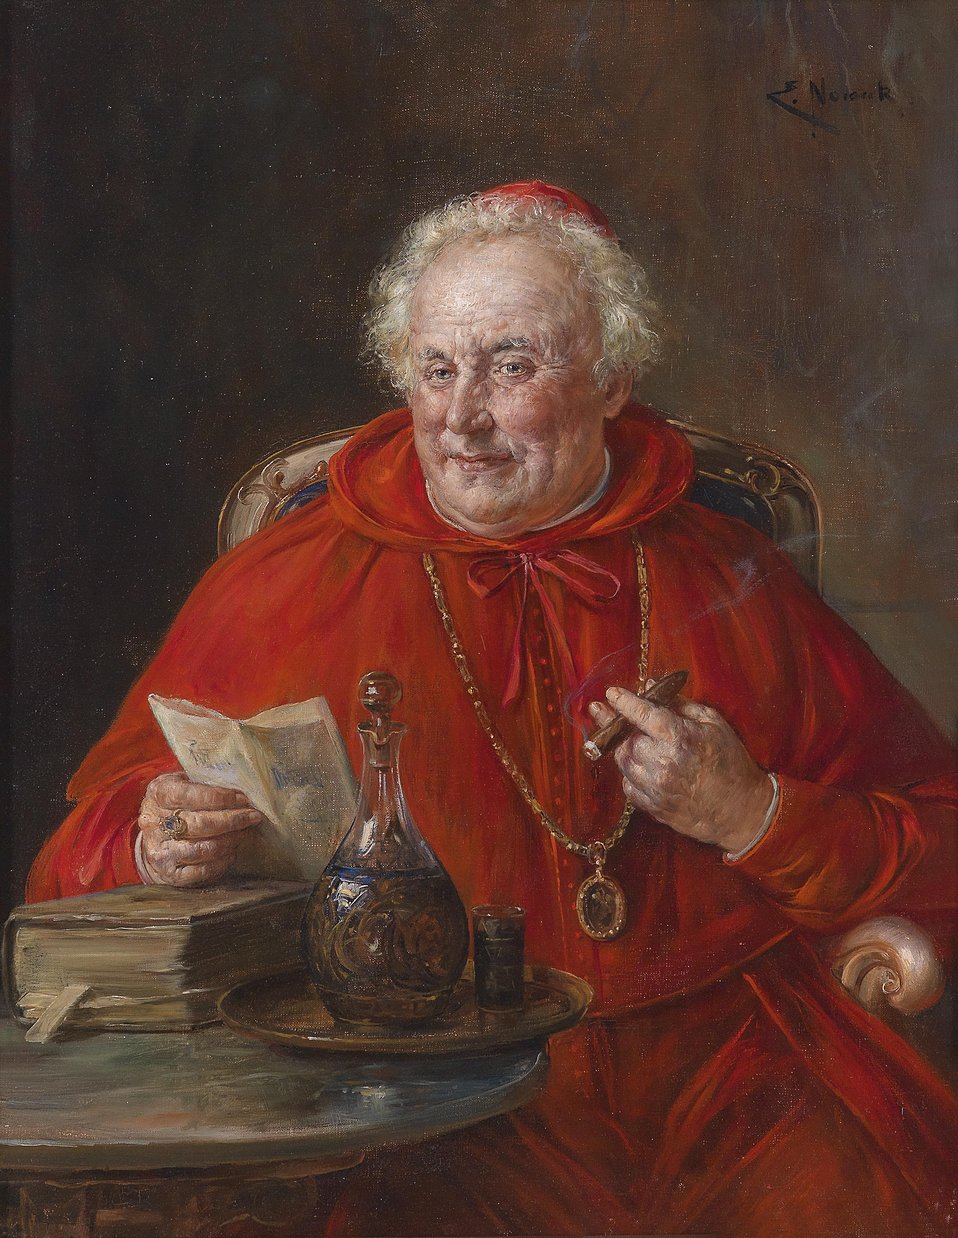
Eine gute Zigarre!, signiert E. Nowak, Öl auf Leinwand, 47 x 37,5 cm